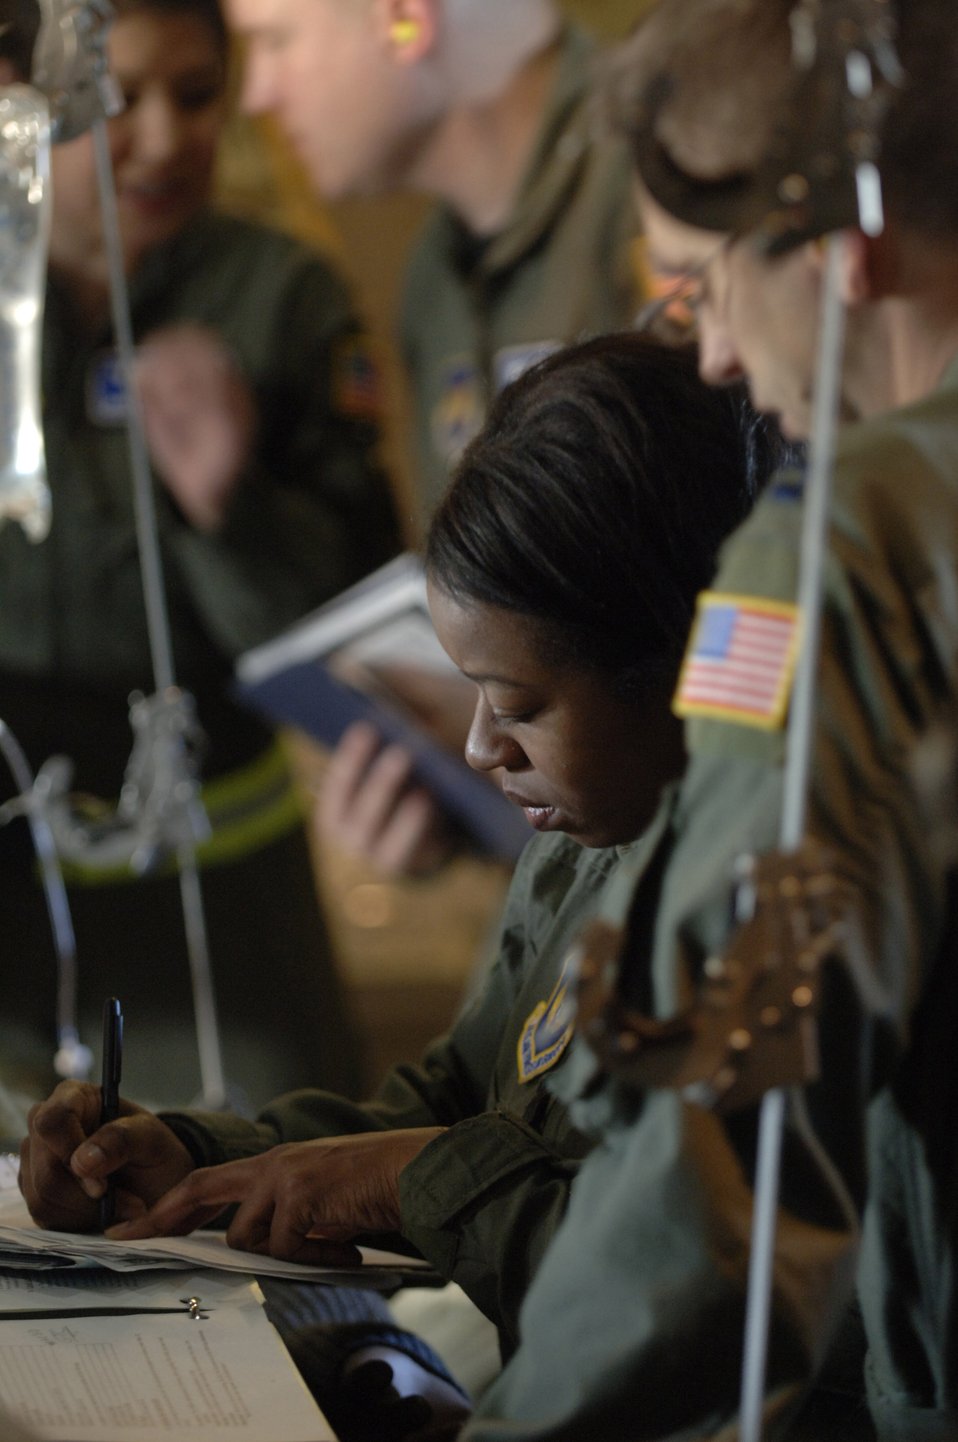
Medical professionals hone patient care skills

Capt. Pamela Banks records the effects of the decompression on patients while Capt. Troy Kinion looks on following a rapid decompression training scenario Feb. 19 aboard a C-130 Hercules flying over southern Germany. The flight-qualified healthcare providers, assigned to the 86th Aeromedical Evacuation Squadron, fly weekly with the 37th and 38th Airlift Squadron's C-130 fleet to remain proficient in their skills. Captain Banks is a flight nurse, and Captain Kinion is a flight nurse instructor.